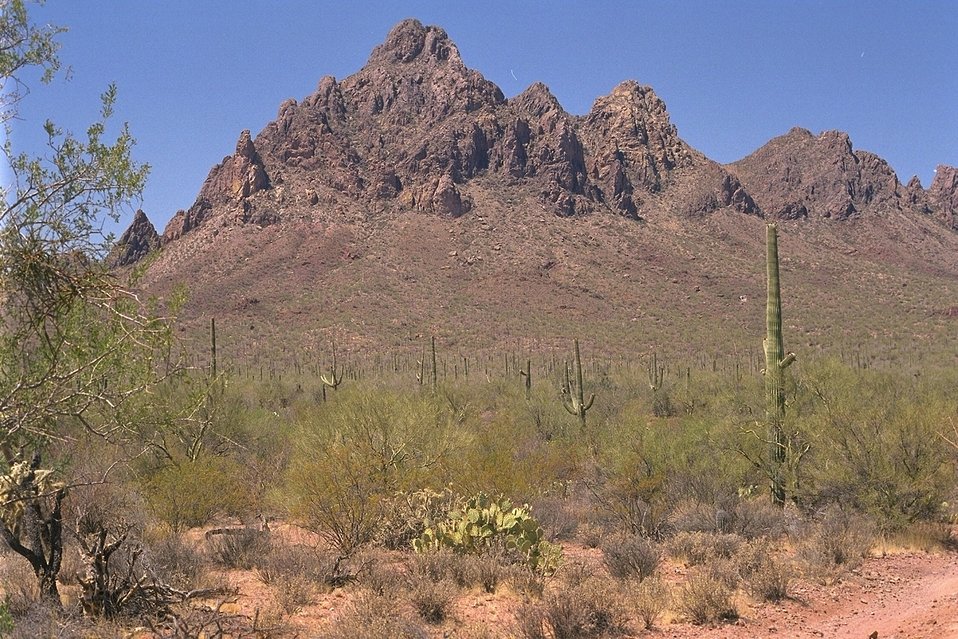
The Ragged Top Mountains standing tall in the Ironwood Forest National Monument. These mountains are described as the biological and geological crown jewel of the Silver Bell Mountains.